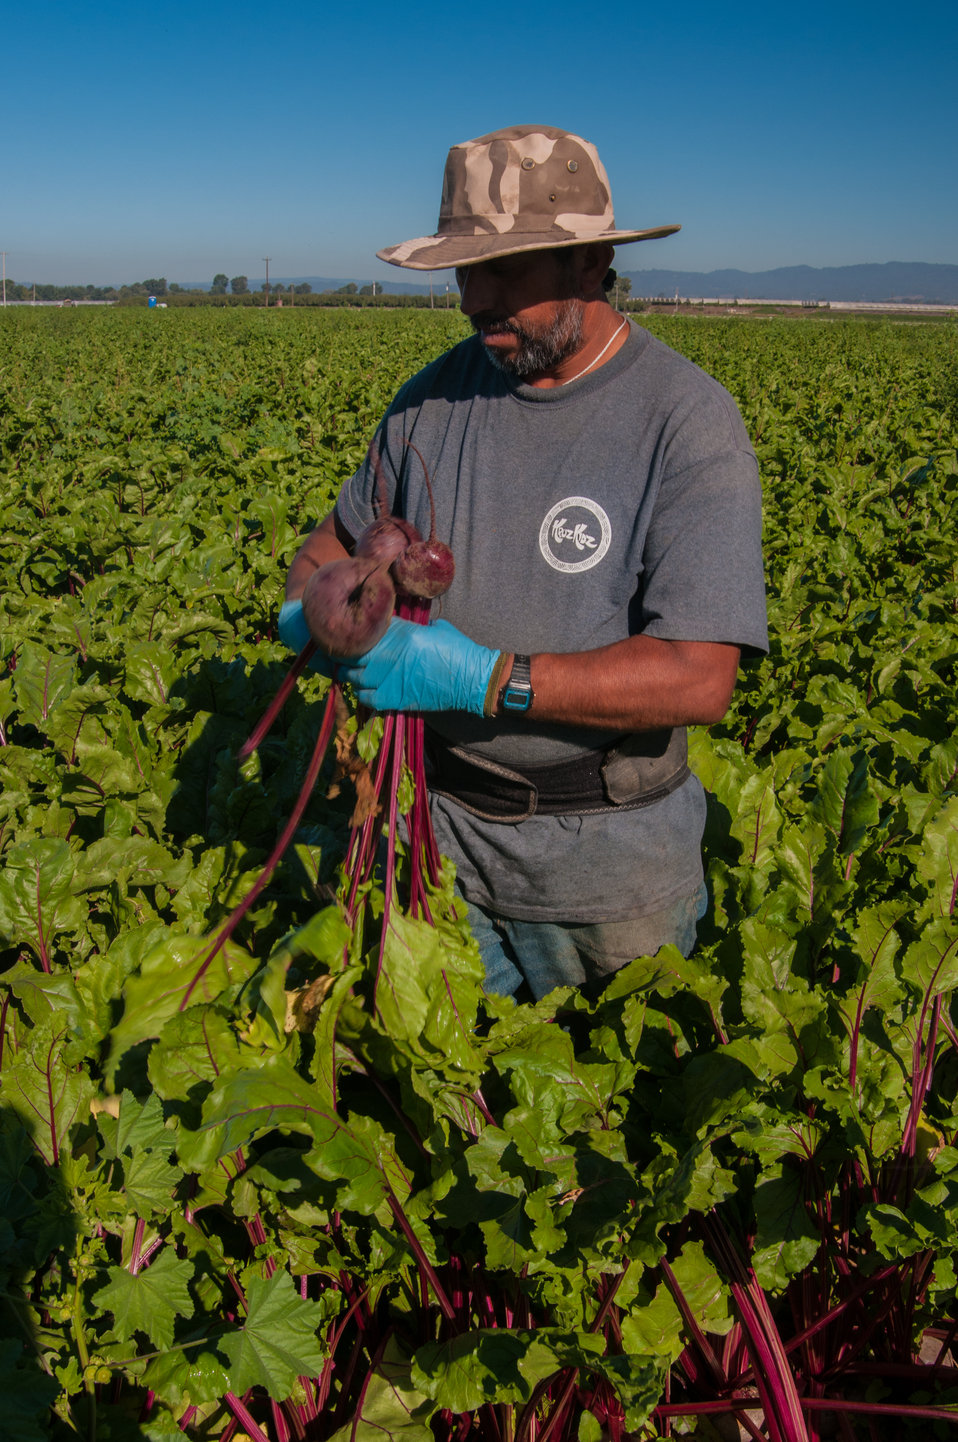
Migrant workers harvest Beets at Lakeside Organic Gardens in Watsonville, CA on Tuesday, Aug. 27, 2013.